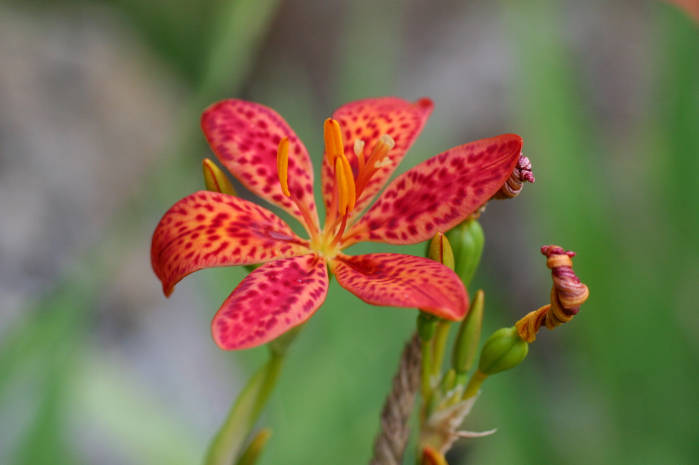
BlackberryLily,